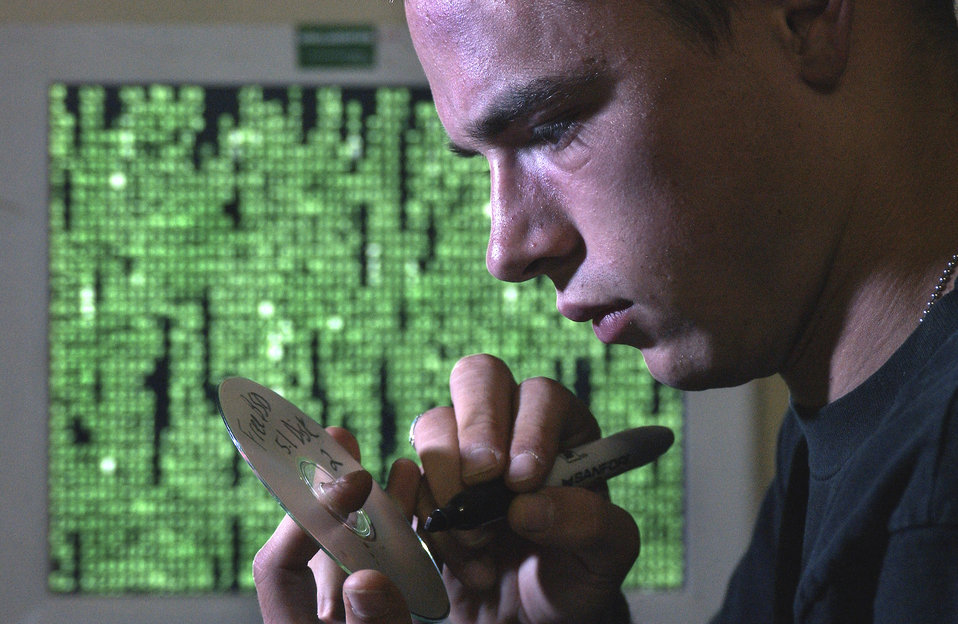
Label-maker

BAGHDAD INTERNATIONAL AIRPORT, Iraq -- Senior Airman Jaime Pagan labels a backup compact disc for testing in his computer. He is deployed here as part of the 447th Expeditionary Communication Squadron, which is responsible for running the network control center and keeping the Air Force in Baghdad online. Pagan is a network server manager from the 33rd Combat Communications Squadron at Tinker Air Force Base, Okla.